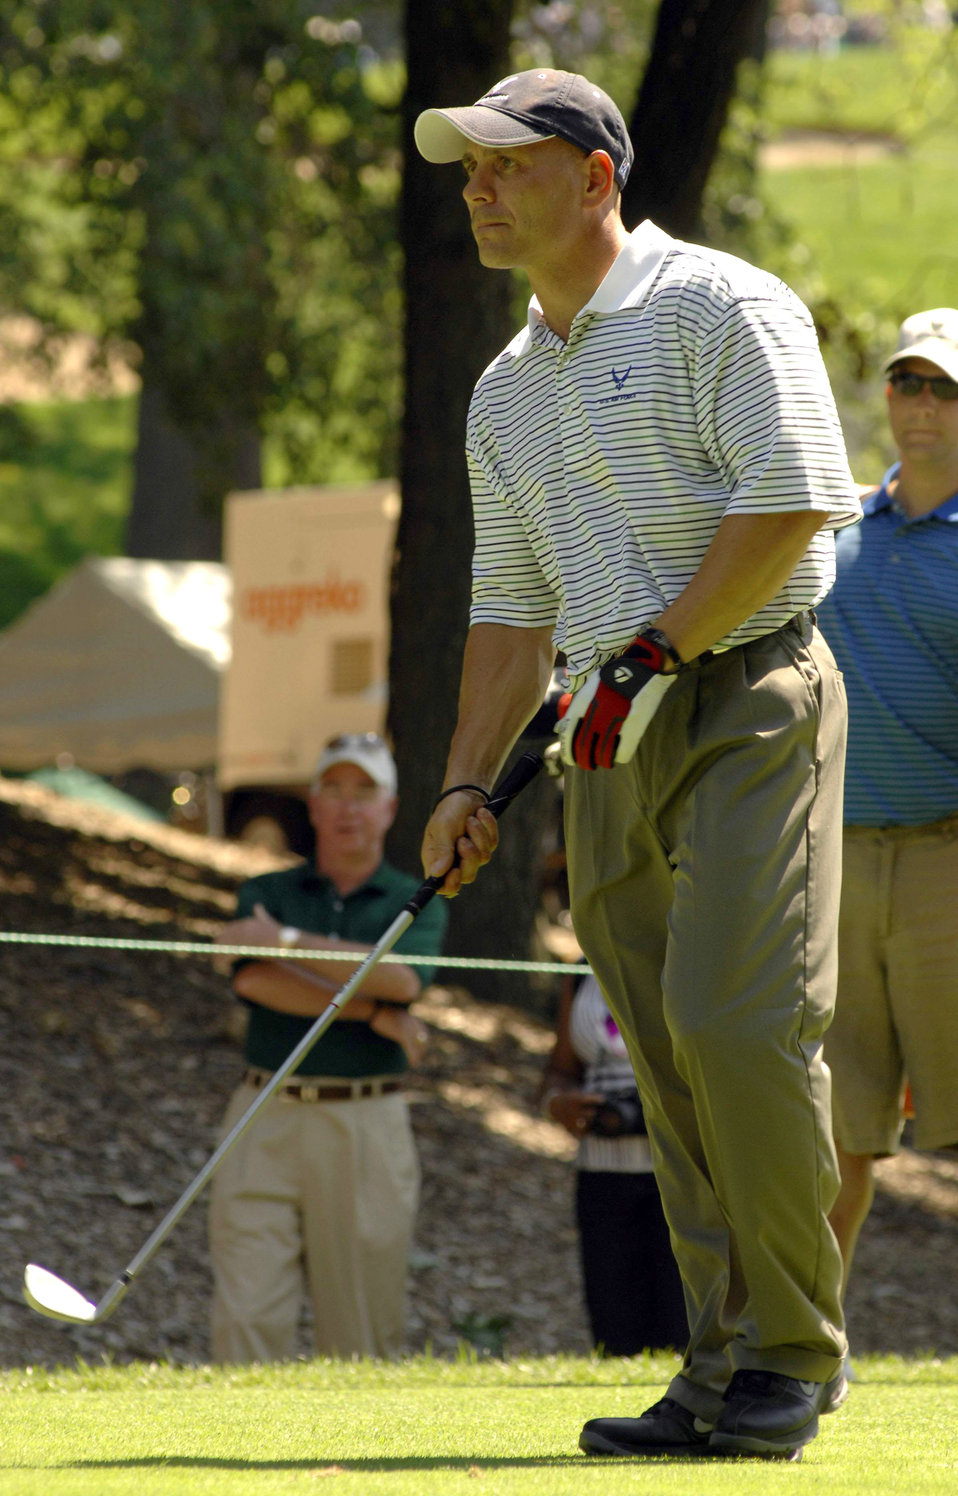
Andrews Airman participates in national golf tournament

Senior Master Sgt. Kirk Kessler lines up his shot during the 2nd Annual AT&T National Golf Tournament July 2 at the Congressional Country Club in Bethesda, Md. The Tiger Woods Foundation selected Sergeant Kessler to play in the tournament. Sergeant Kessler is assigned to the 316th Civil Engineer Squadron from Andrews Air Force Base, Md.